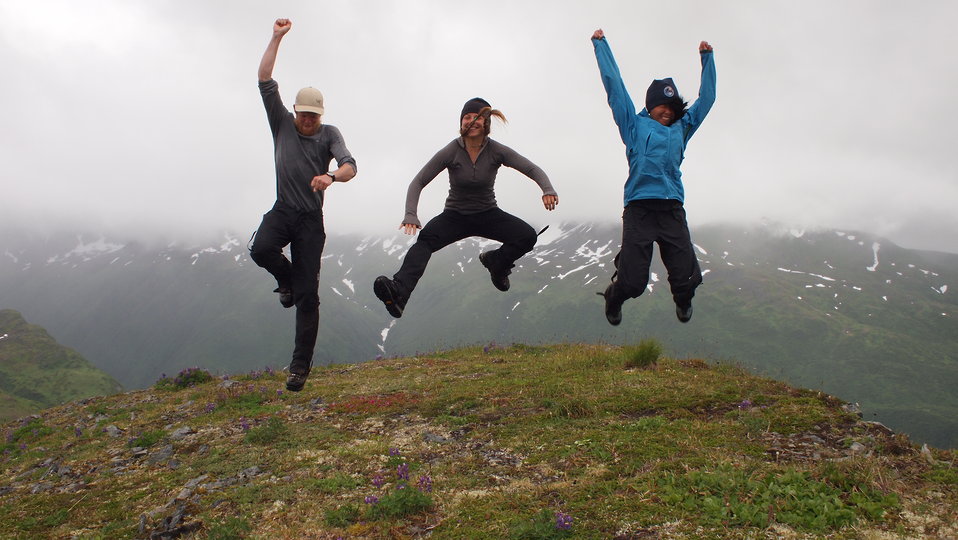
Volunteers and biology technician from Mt. goat research crew

Photo Credit: USFWS
Source: Kodiak NWR